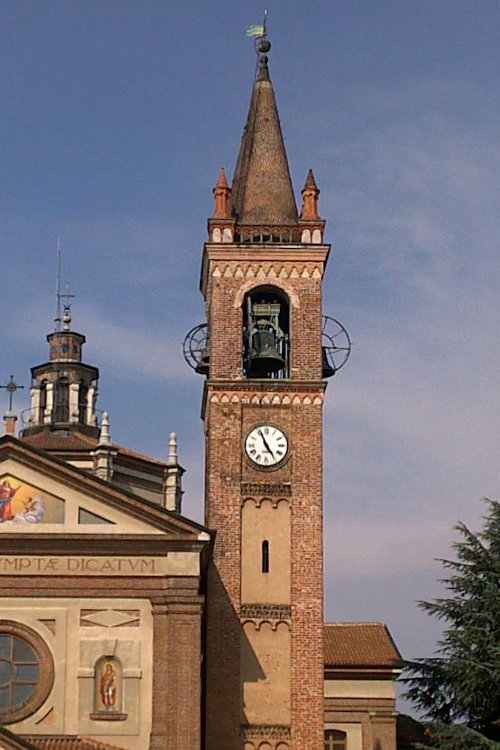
Il campanile della parrocchiale di Cislago (VA)